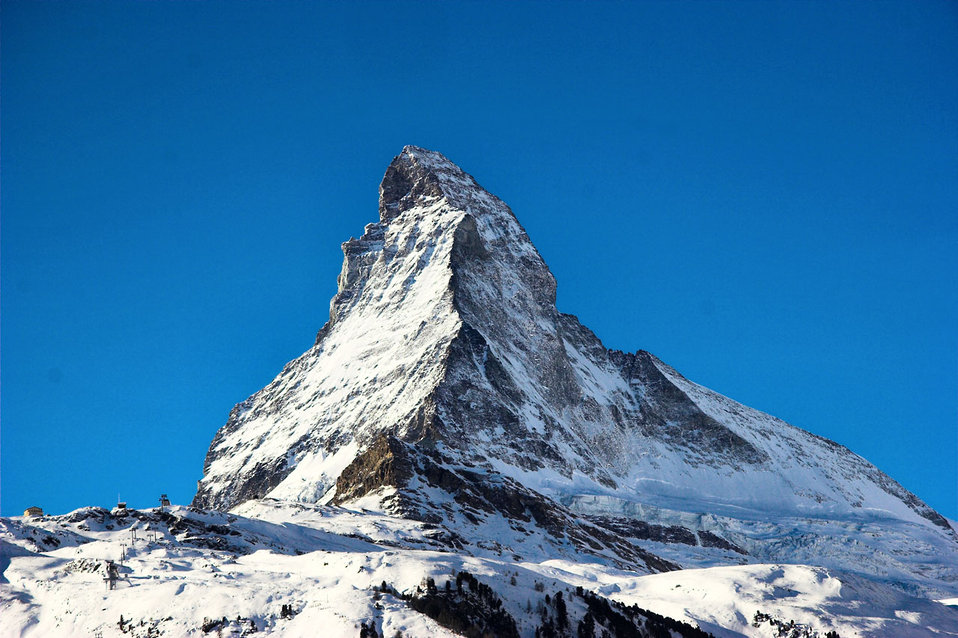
Matterhorn

North face of the matterhorn.